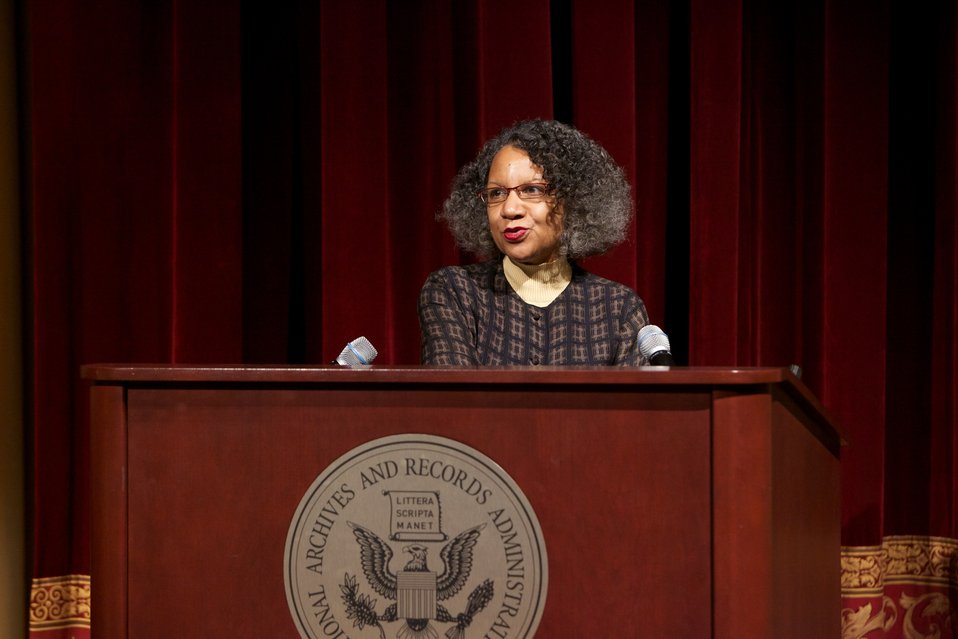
A Nation of Immigrants: How They Shaped America